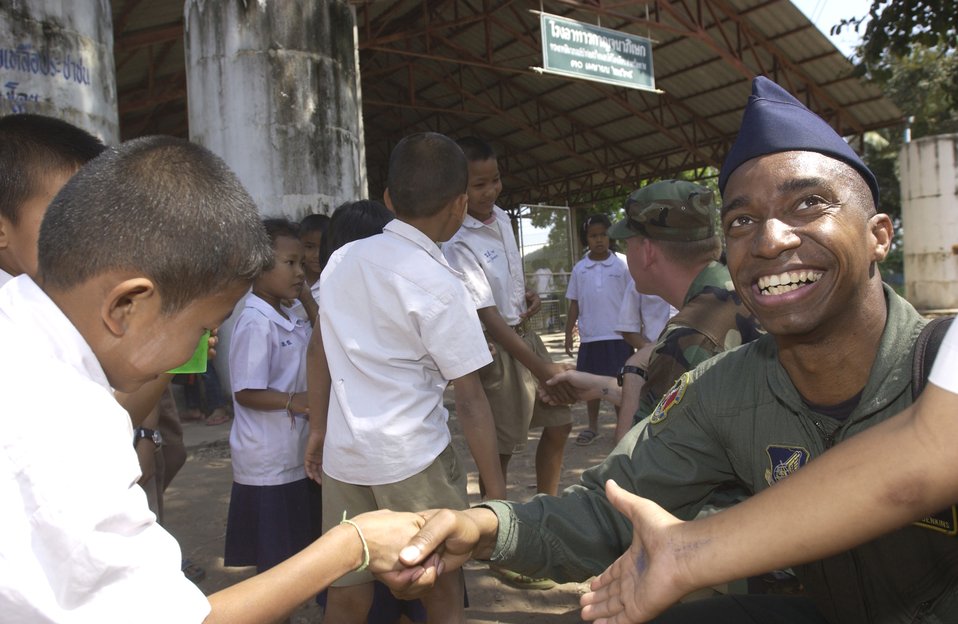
Cope Tiger '06

NAKHON RATCHAISMA, Thailand (AFPN) -- Tech. Sgt. Clarence Jenkins smiles as he greets a student at an elementary school near Korat Royal Thai Air Base, Thailand, during a break from Cope Tiger '06 exercises. Sergeant Jenkins was part of a group of Airmen who delivered sports equipment and other supplies to the Ang Huay Yang Elementary School Feb. 10. Sergeant Jenkins is a flight engineer with the 36th Airlift Squadron at Yokota Air Base, Japan.